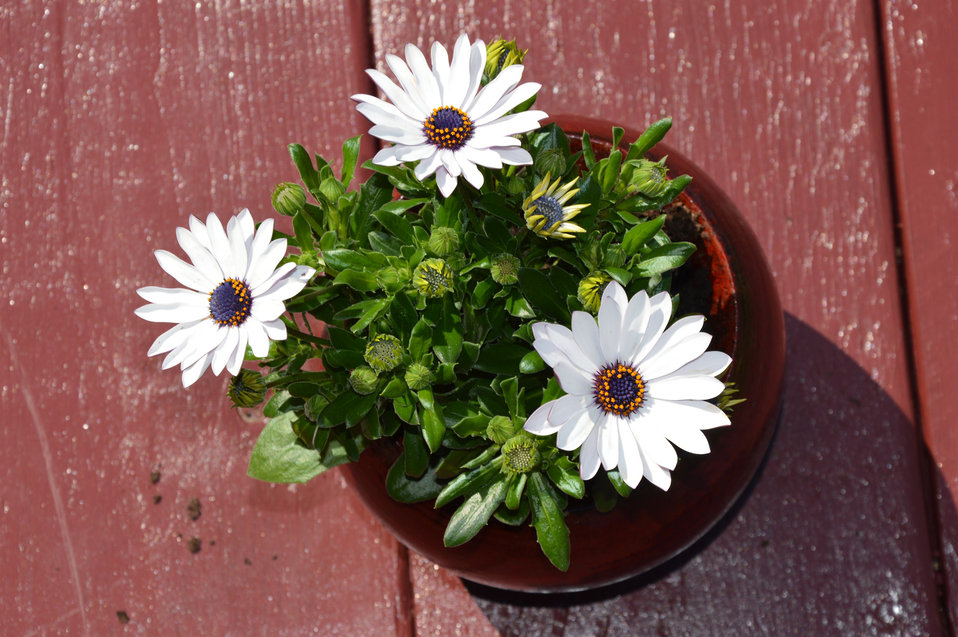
Flowerpot with flowers

Photo is taken from above.